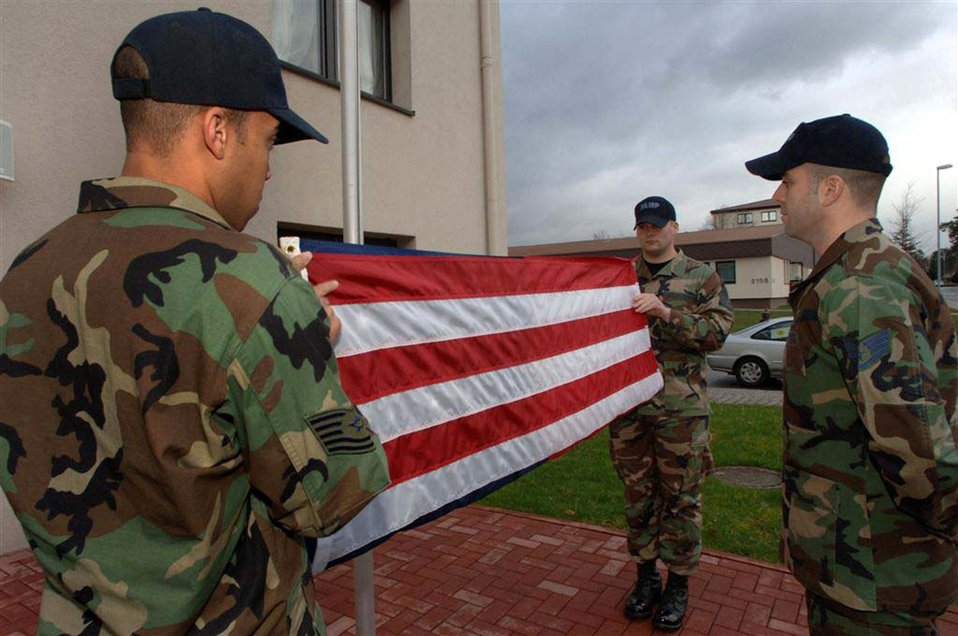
Motivational program ends at Ramstein

Staff Sgt. Joe Gallina (right) stands at parade rest as Ramstein Area Motivational Program, or RAMP, staff members retire the flag during a retreat ceremony. Sergeant Gallina has been part of the RAMP cadre since September 2004.